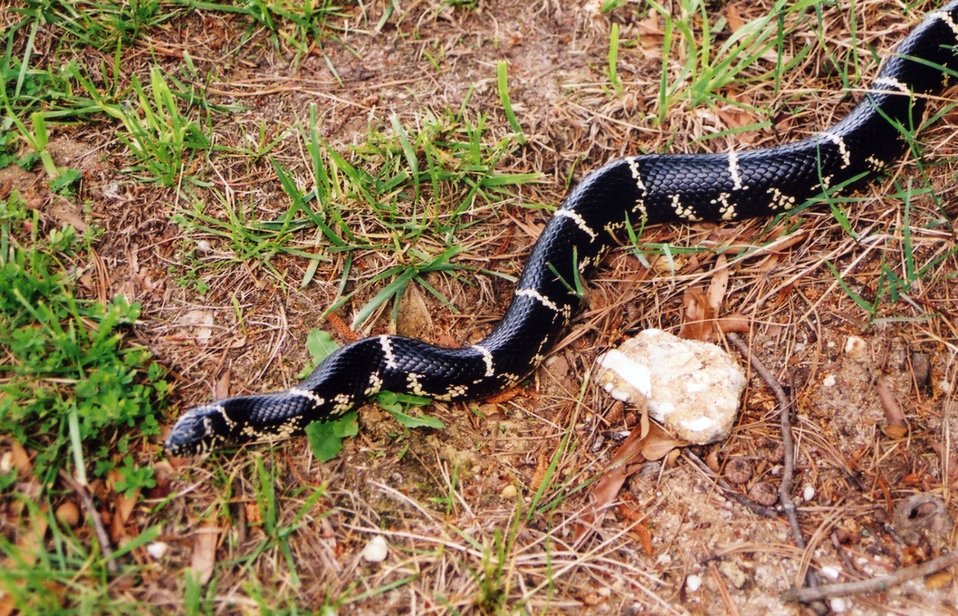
A kingsnake working its way across a Patuxent Beach yard.